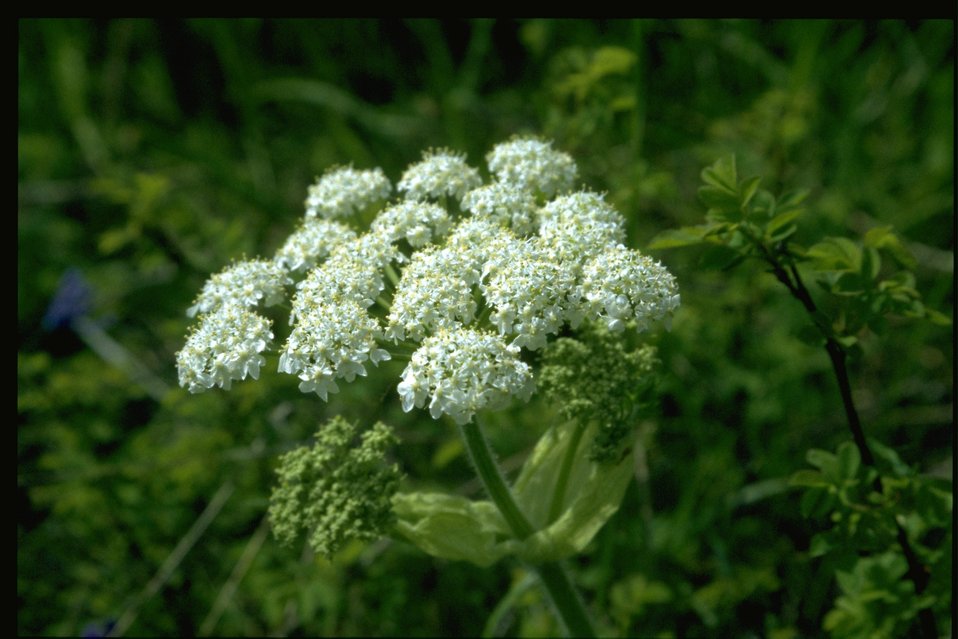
Closeup shot of Angelica genuflexa or arguta.